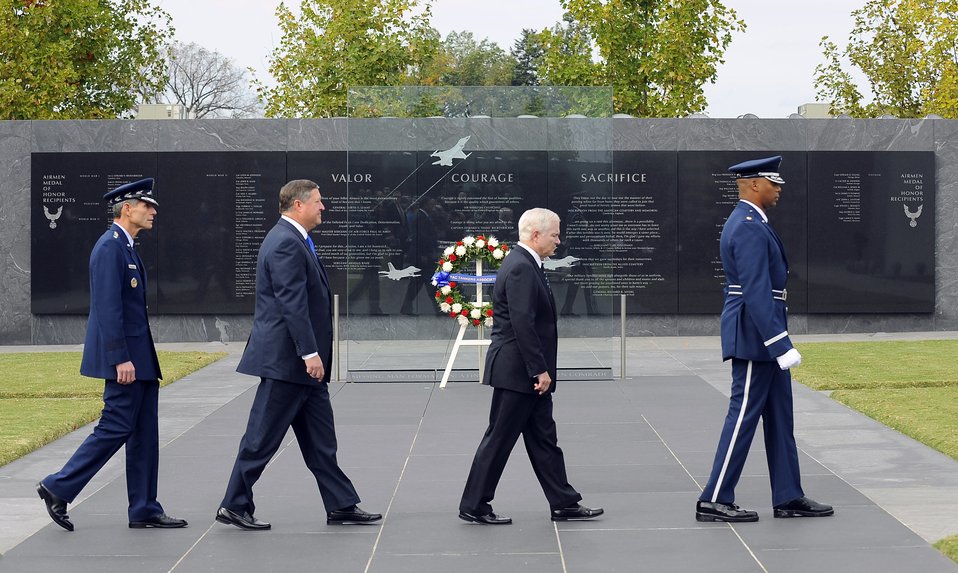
Secretary of Defense Robert M. Gates

U.S. Defense Secretary Robert M. Gates walks with Secretary of the Air Force Michael B. Donley and Air Force Chief of Staff Norton A. Schwartz prior to Secretary Donley's swearing in by Secretary Gates at the Air Force Memorial in Arlington, Va., Oct. 17.